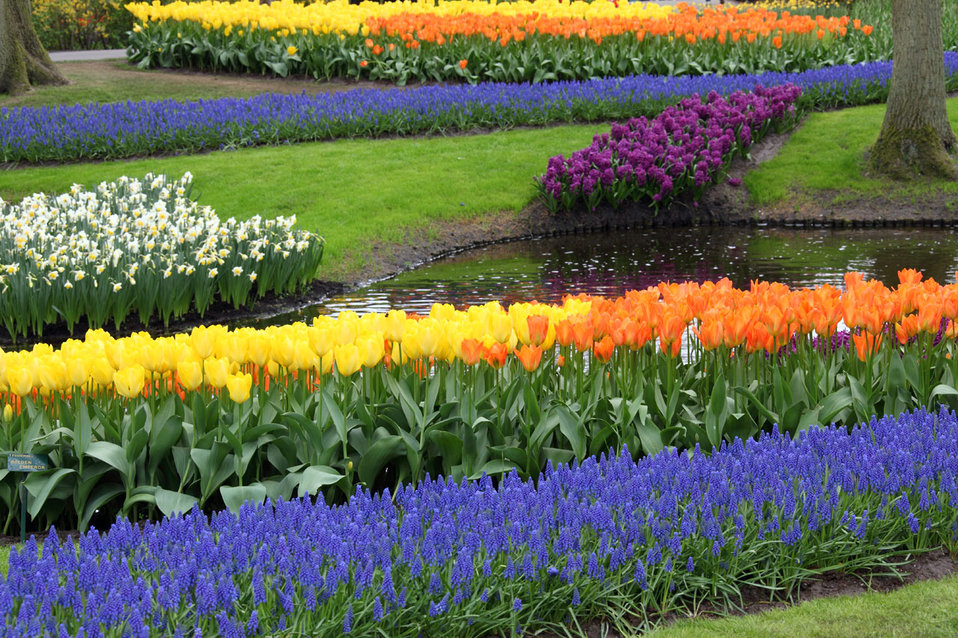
Colorful flower garden

Tulips, hyacinths, grape hyacinths and daffodils in keukenhof gardens.